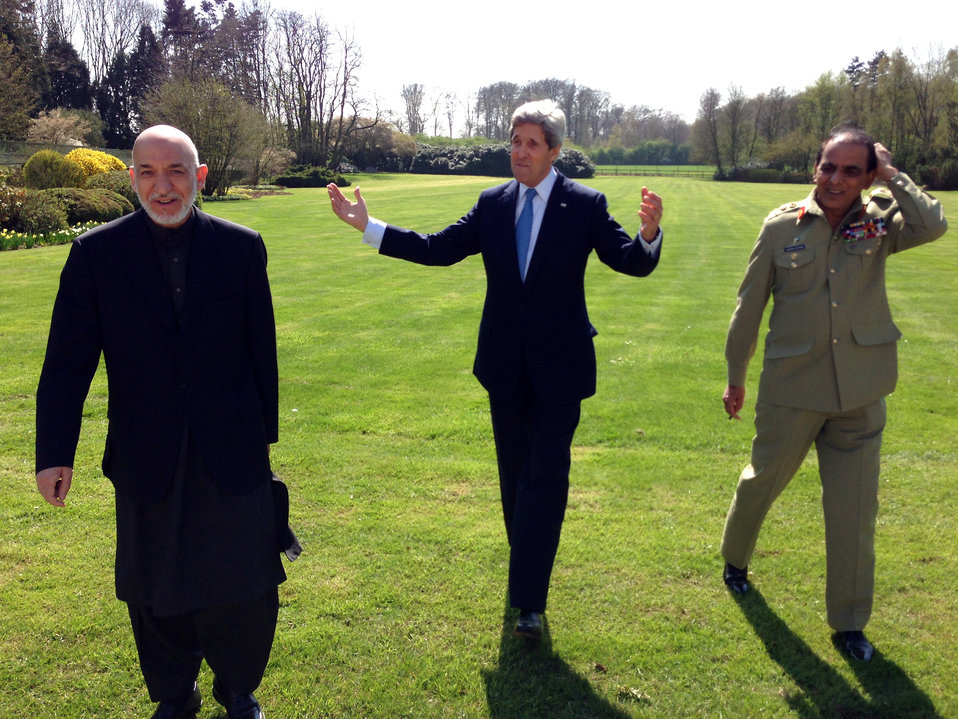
Secretary Kerry, Afghan President Karzai, and Pakistani Chief of Army Staff General Kayani Return From a Walk

U.S. Secretary of State John Kerry, Afghan President Hamid Karzai, and Pakistani Chief of Army Staff General Ashfaq Kayani return from a walk around the backyard of Truman Hall in Brussels, Belgium, on April 24, 2013.